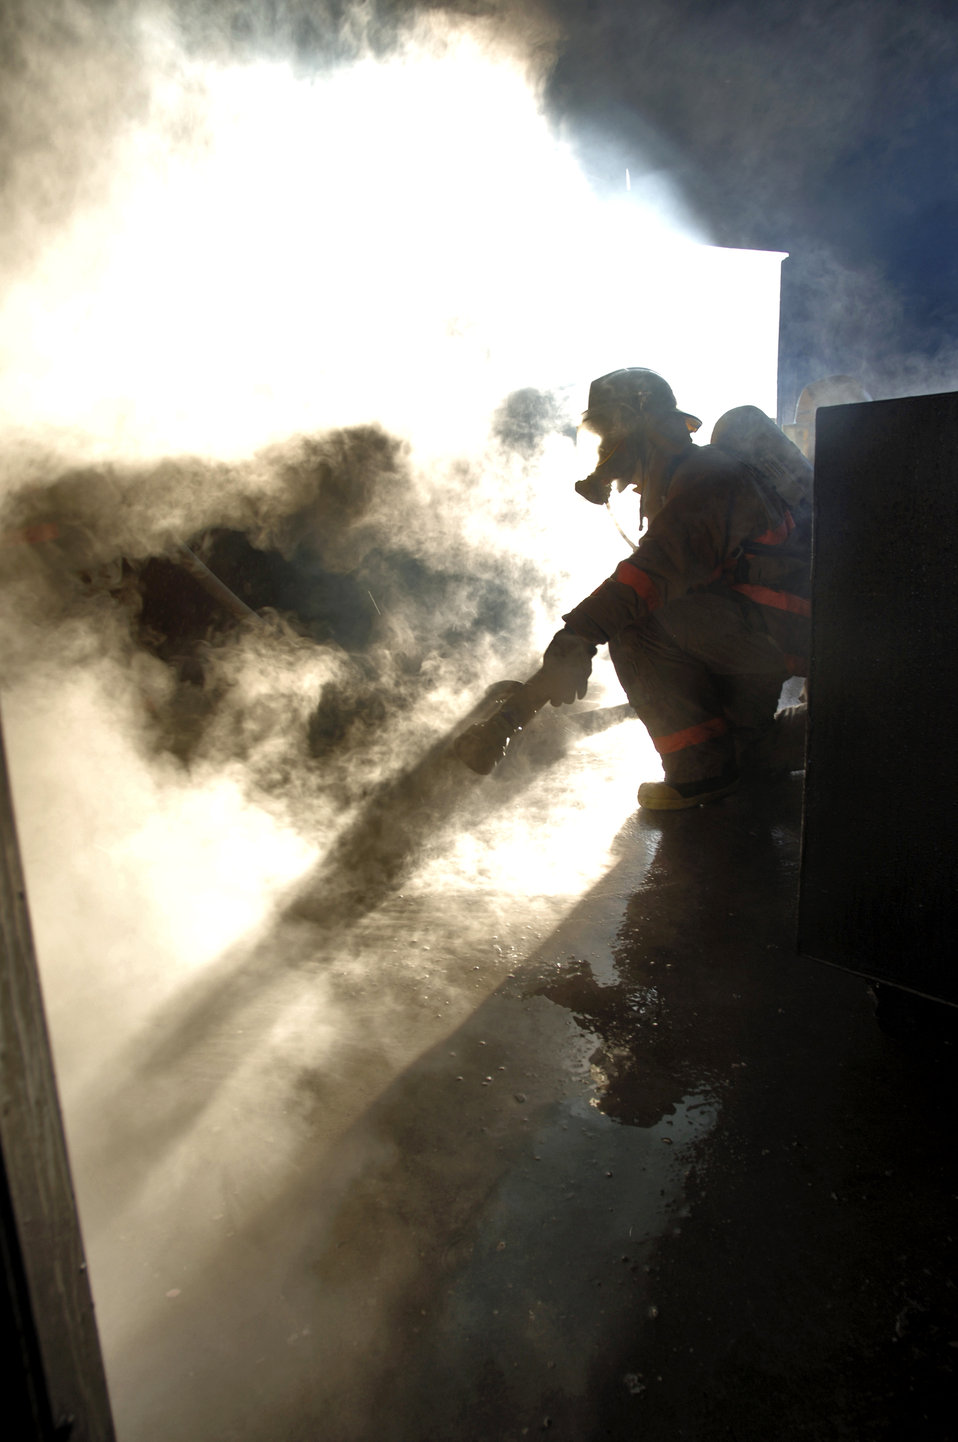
If you can't stand the heat...

GOODFELLOW AIR FORCE BASE, Texas (AFPN) -- A firefighting student scans the smoky scene before moving to support an